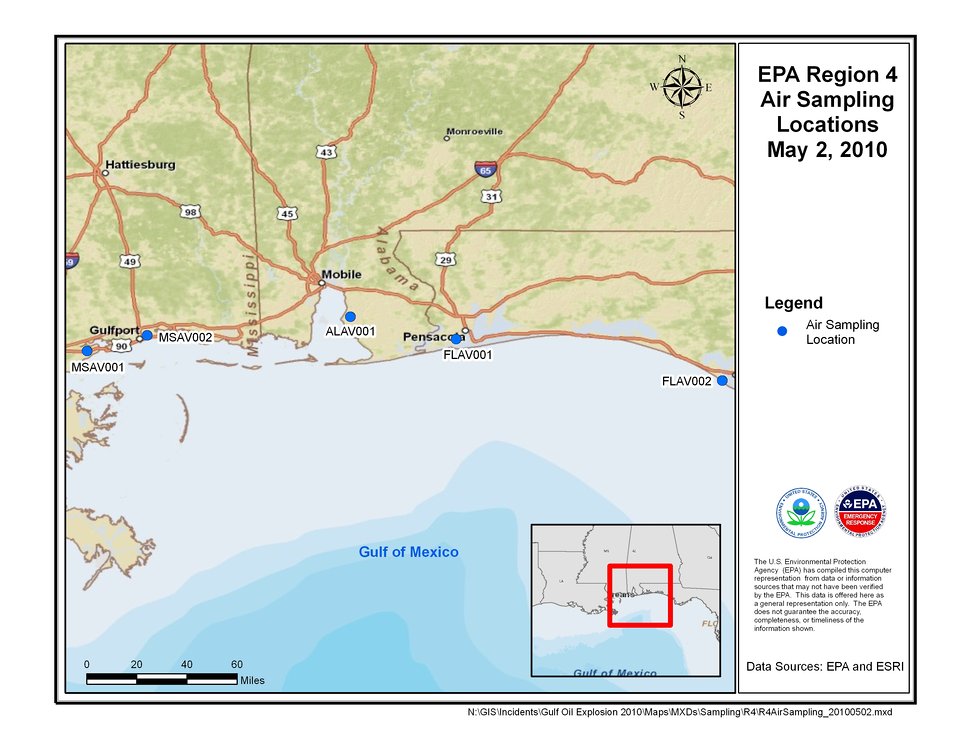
EPA Air Sampling Locations May 2, 2010